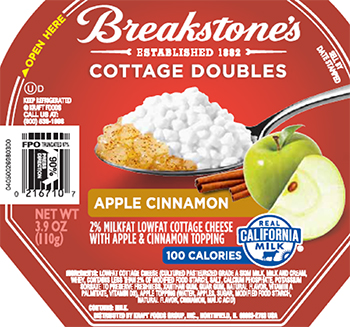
RECALLED – Cottage Cheese products

May 17, 2014 – Product Recall – Kraft Foods Group Voluntarily Recalls Select Cottage Cheese Products Due to Out-of-Standard Storage Temperatures
Certain Knudsen Cottage Cheese, Breakstone’s Cottage Cheese, Simply Kraft Cottage Cheese and Daily Chef Cottage Cheese Products Included in the Recall
.